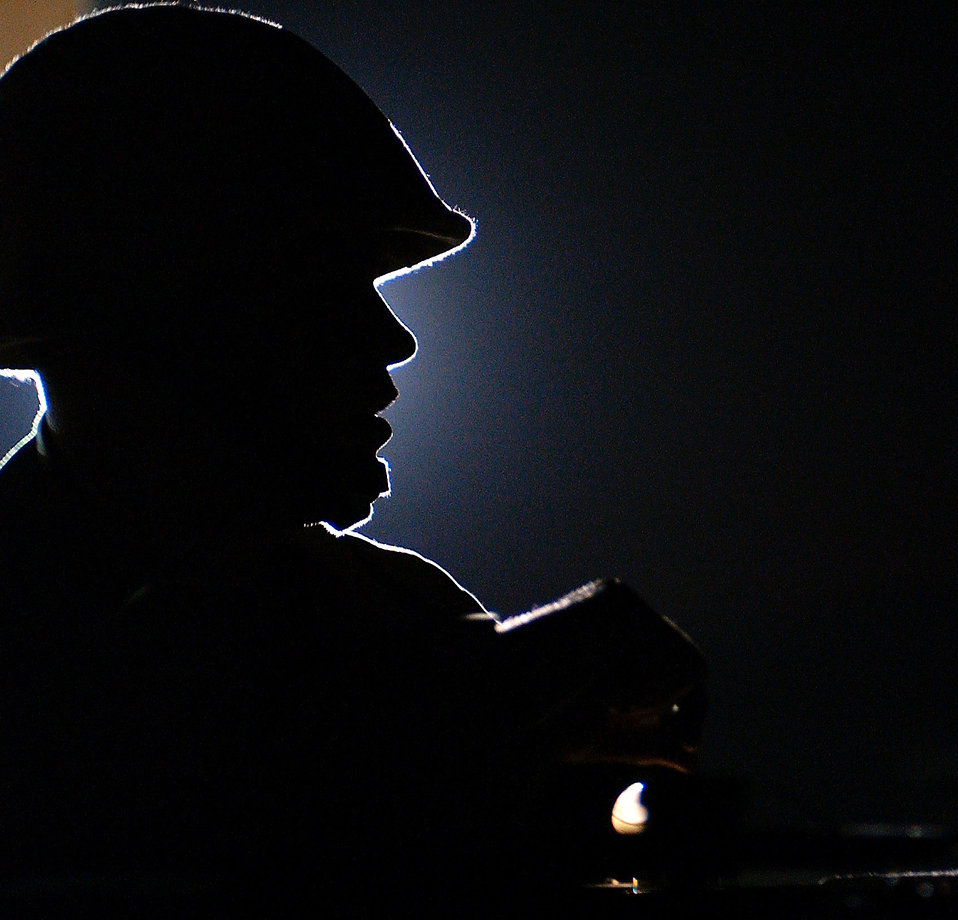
Night shift

OPERATION IRAQI FREEDOM -- An Air Force maintainer works the night shift March 24 at a forward-deployed Operation Iraqi Freedom location.